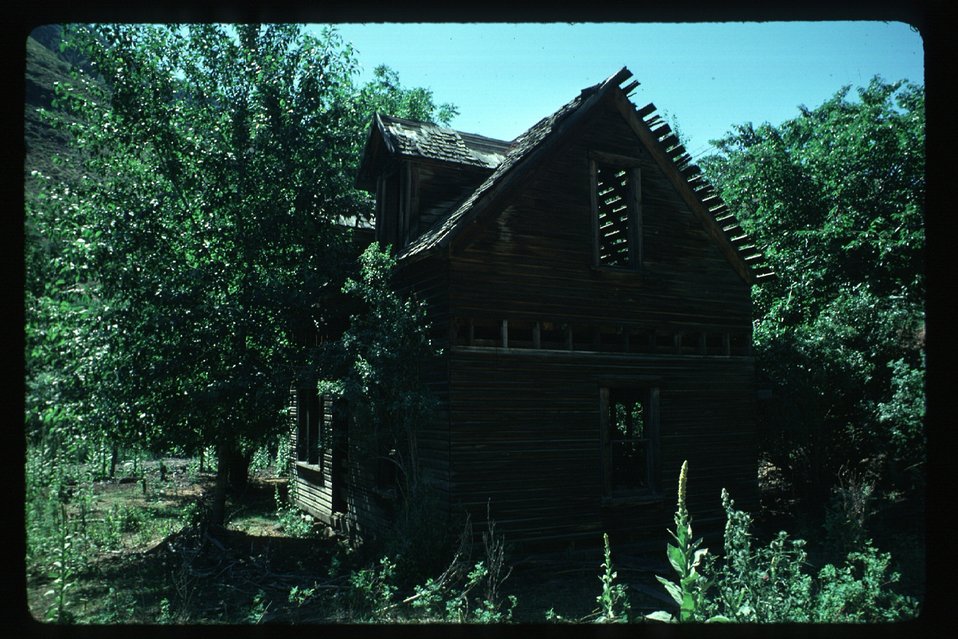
Old house in Wildhorse Canyon Architecture Silver City Cultural Resources Owyhee Field Office LSRD Lower Snake River District